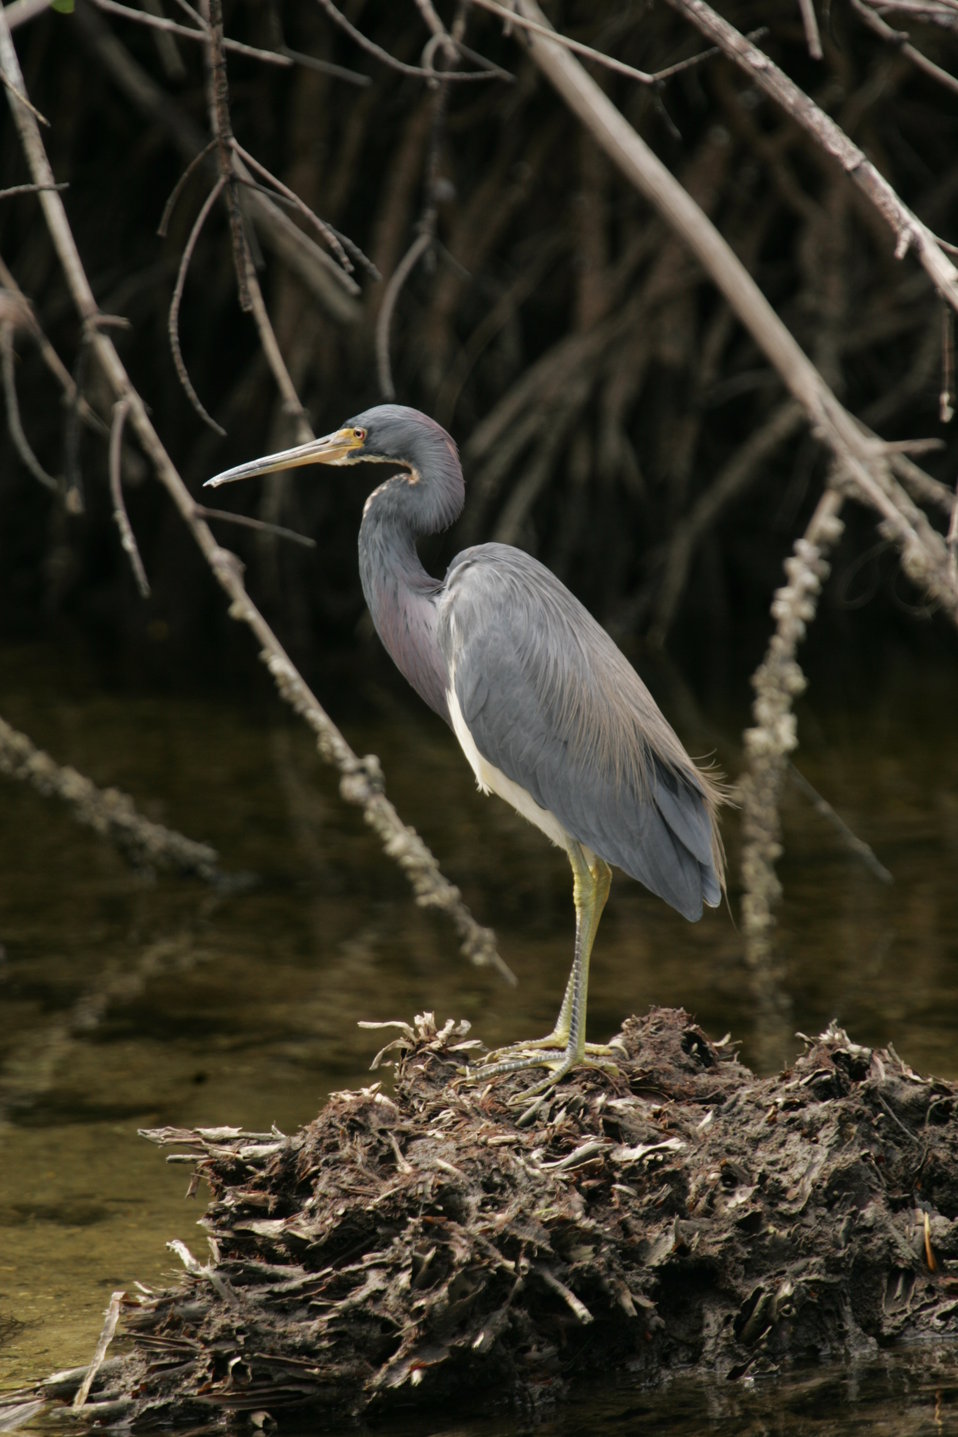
Tricolored Heron, J.N. 'Ding' Darling NWR